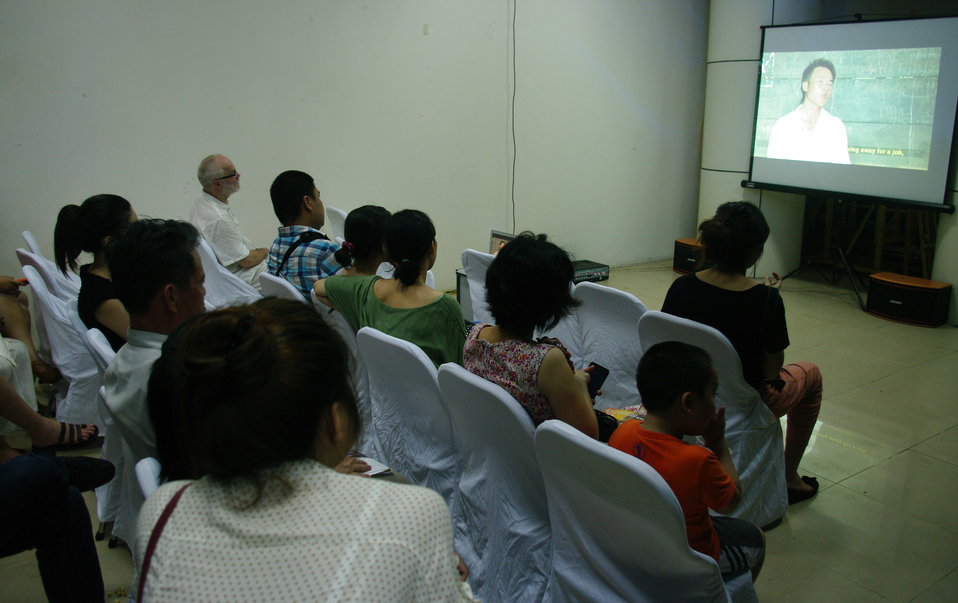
MTV EXIT opens Youth Forum in Hanoi